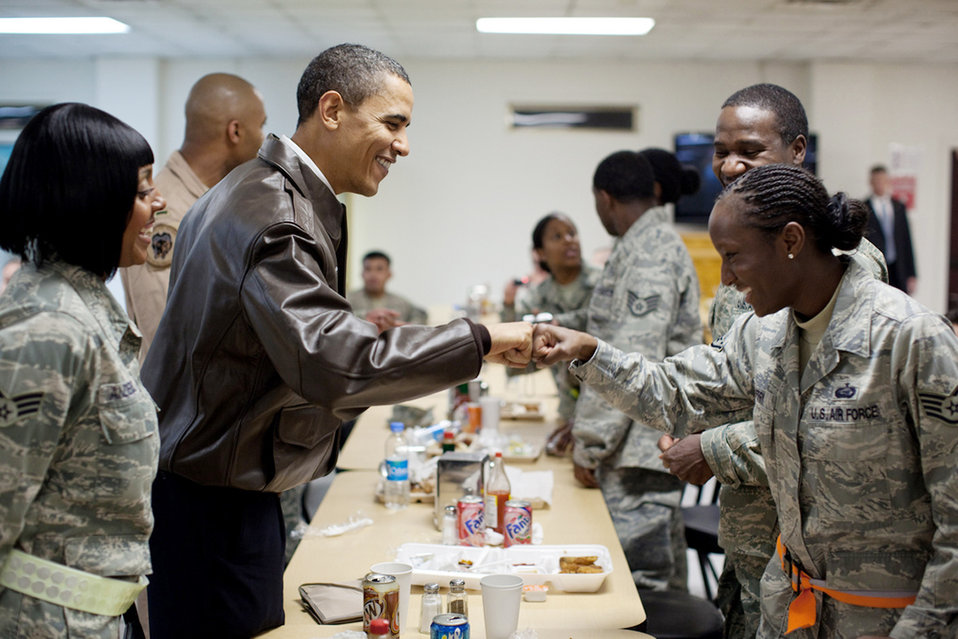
President Obama pays surprise visit to troops in Afghanistan

President Barack Obama meets U.S. troops at a mess hall March 28, 2010, at Bagram Airfield, Afghanistan.